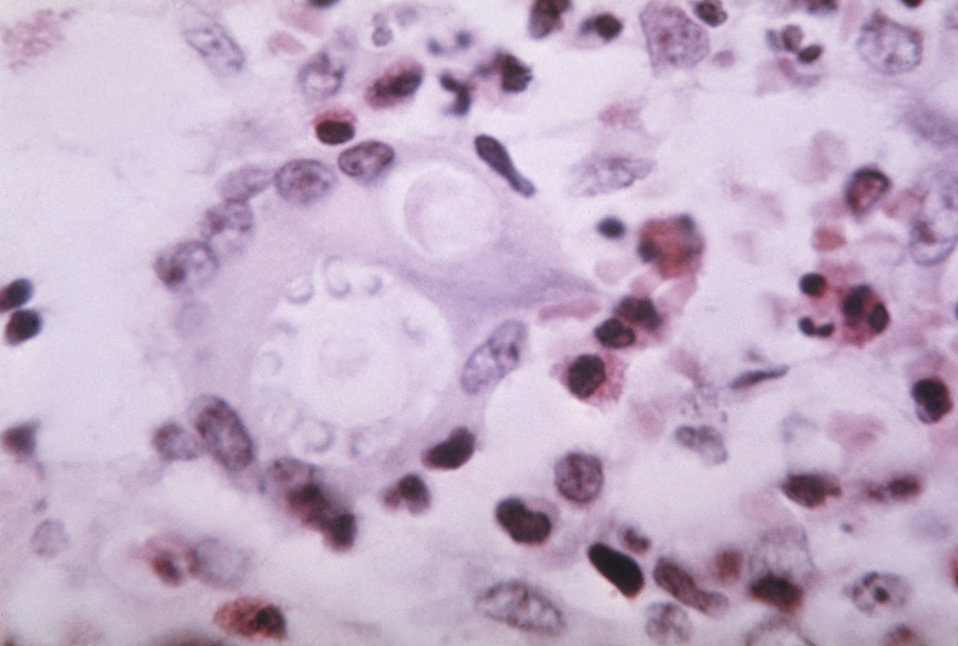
Histopathology of paracoccidioidomycosis, skin.